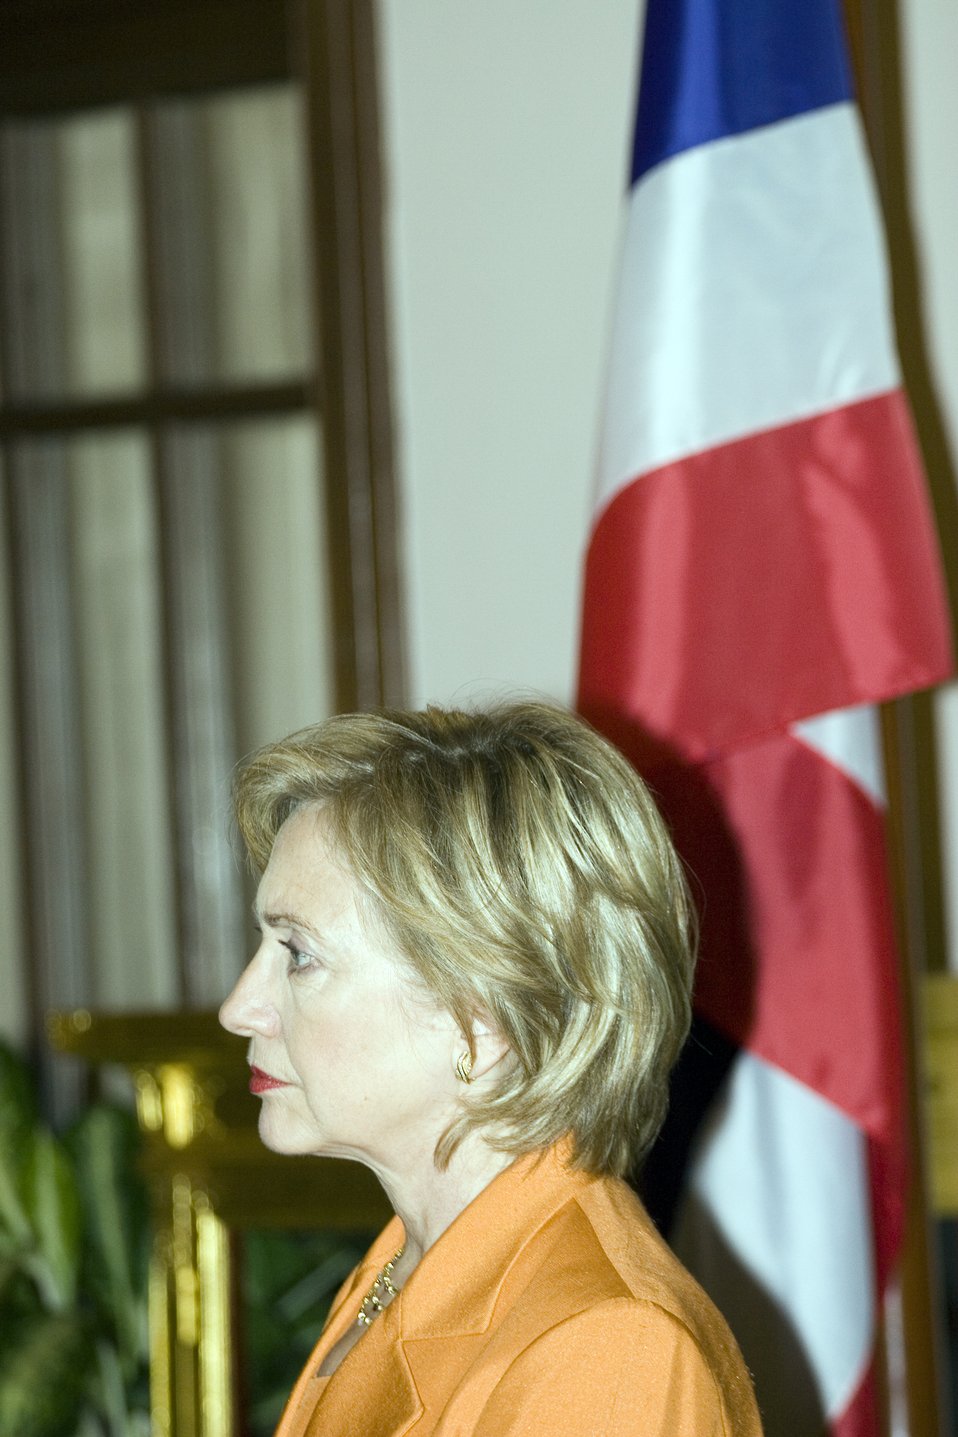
U.S.-Thailand Bilateral Meeting

U.S. Secretary of State Hillary Rodham Clinton answers questions from the press following the bilateral meeting at Government House in Bangkok, Thailand July 21, 2009.